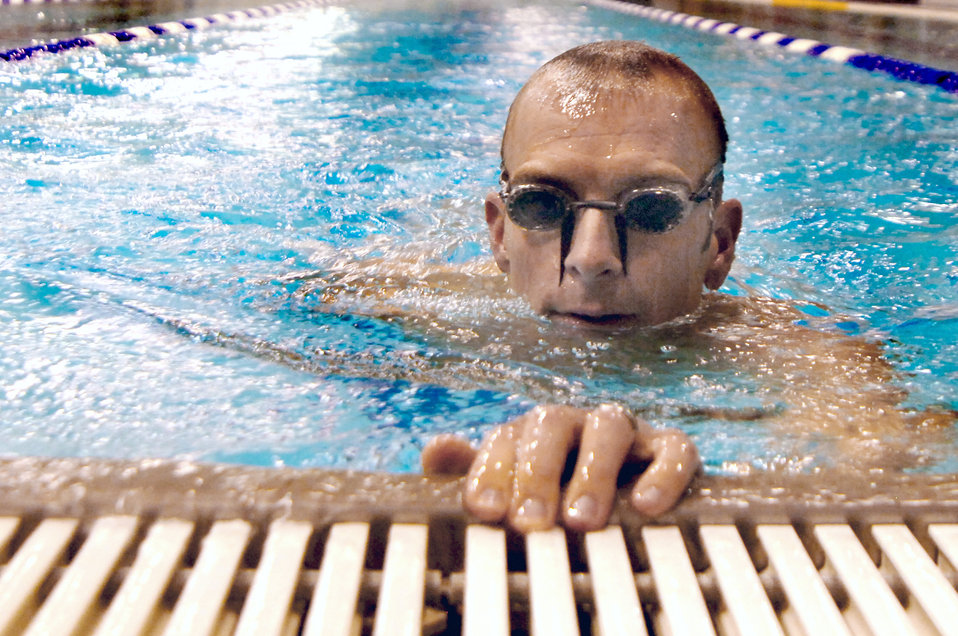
Academy officer picked for top triathlon

Maj. Scott Poteet, the adviser for Air Force Academy Cadet Squadron 02, trains for the 2010 Ironman Triathlon Oct. 4, 2010 at the Academy. Poteet's regimen includes more than three hours of training per day biking, swimming and running. The Ironman Triathlon takes place Oct. 9 in Kona, Hawaii.